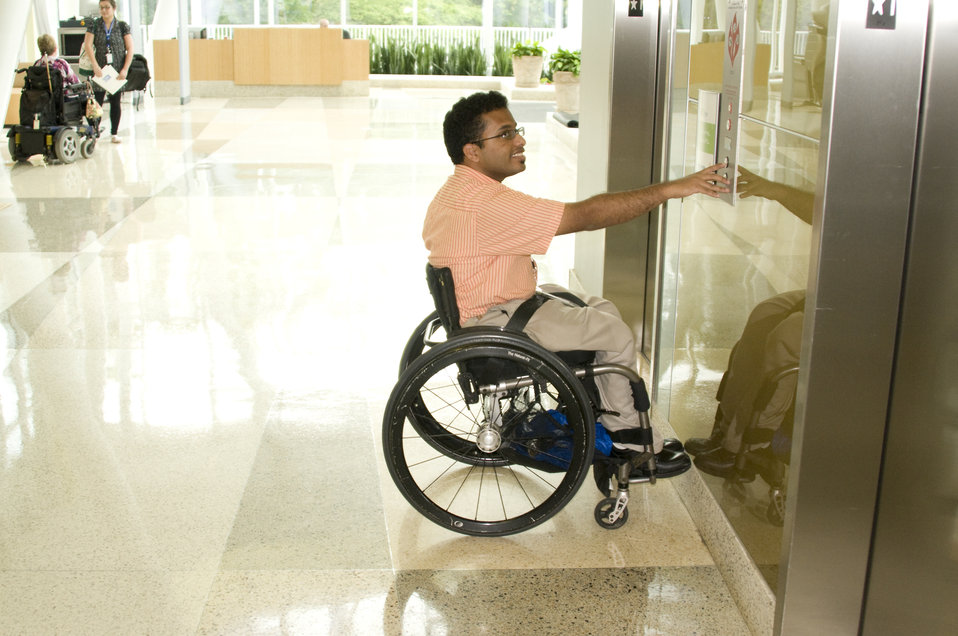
Seated in a wheelchair, the man depicted here was in the process of hailing an elevator from the first floor of one of the Centers for Disease Control and Prevention's (CDC) campus facilities. He was pressing the 'Up' call button, and was looking at the lighted floor indicator above the doors, as he awaited the arrival of an elevator car.